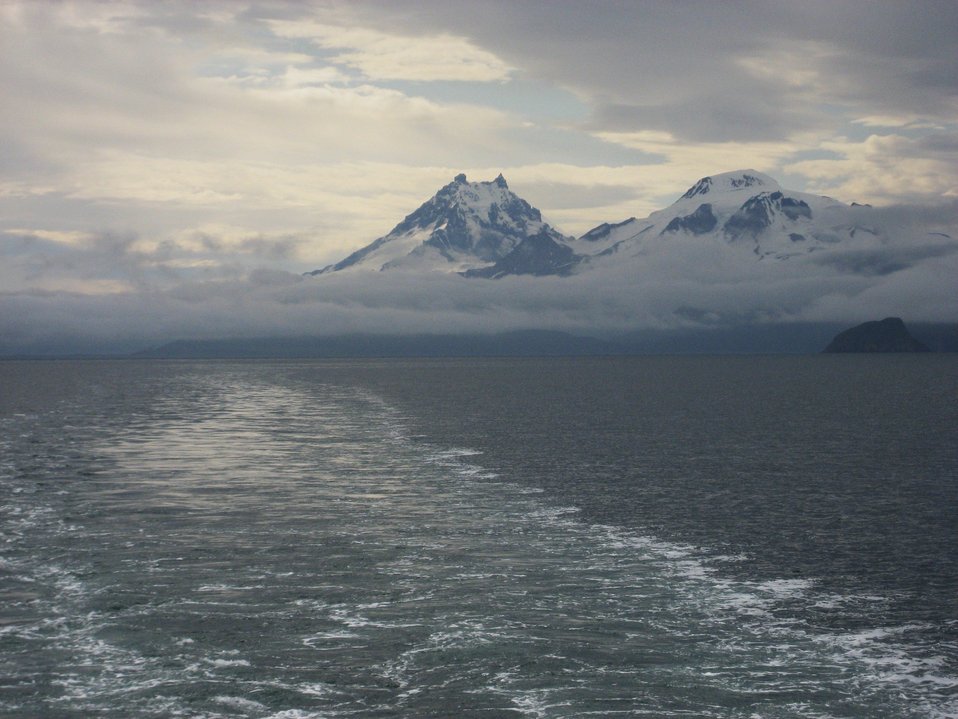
Isanotski (left) and Roundtop Volcanoes